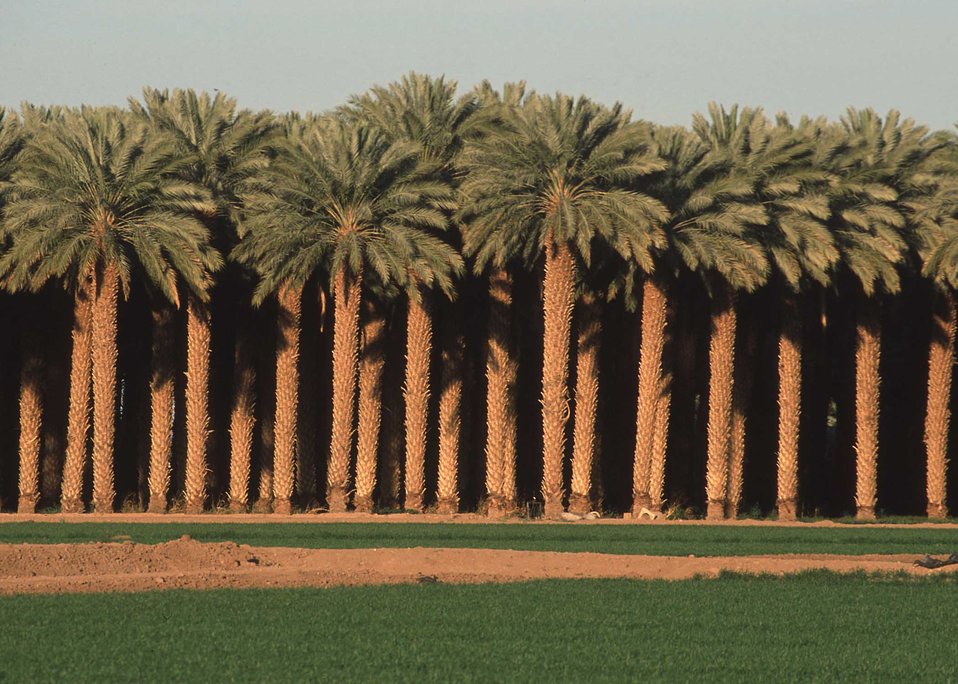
Date trees, Yuma, Az.